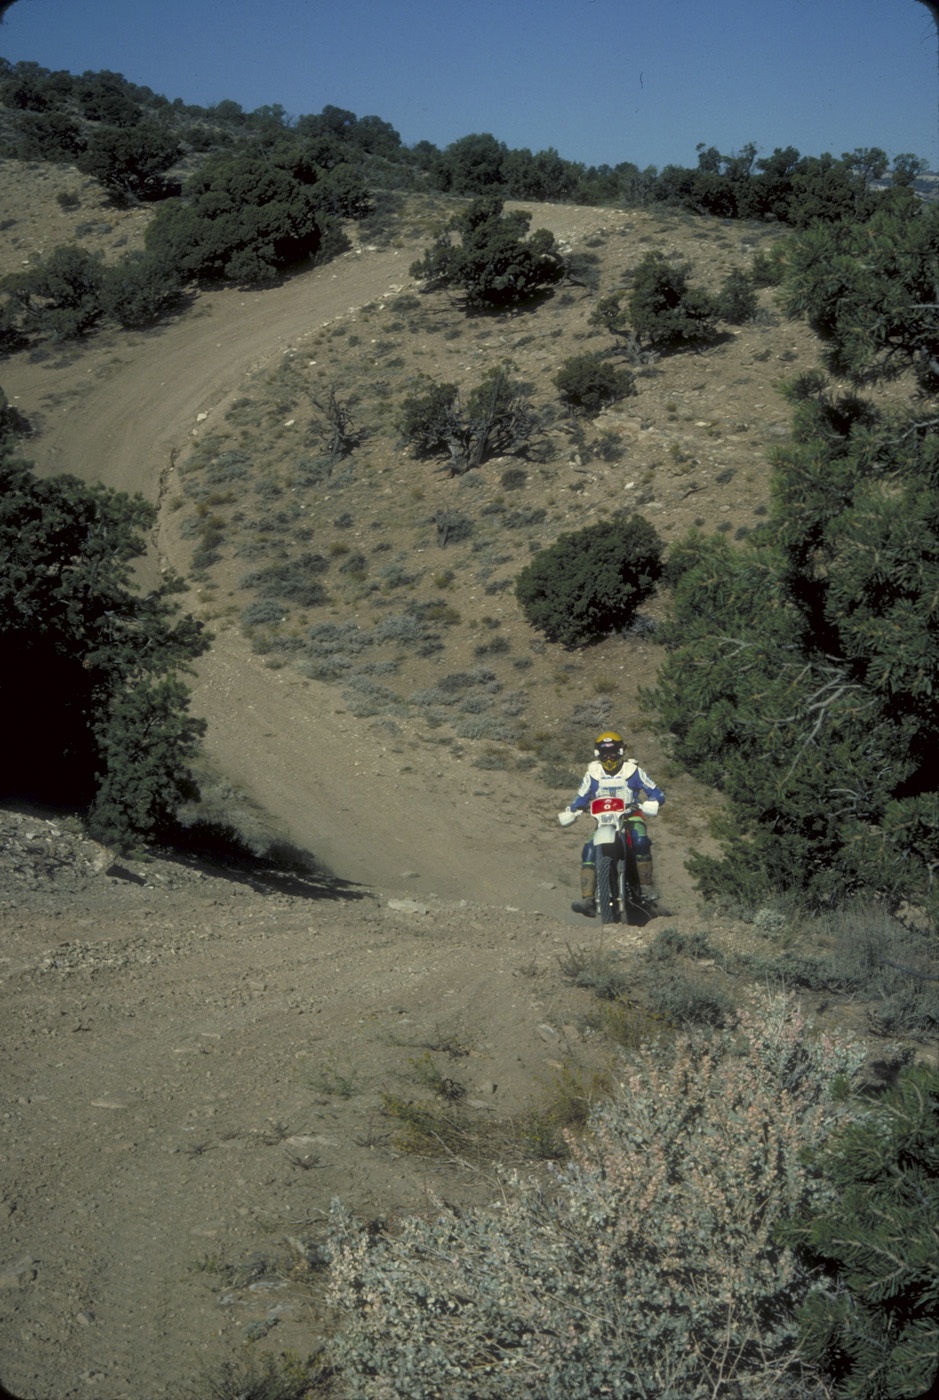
Off-highway vehicle trail on public lands.